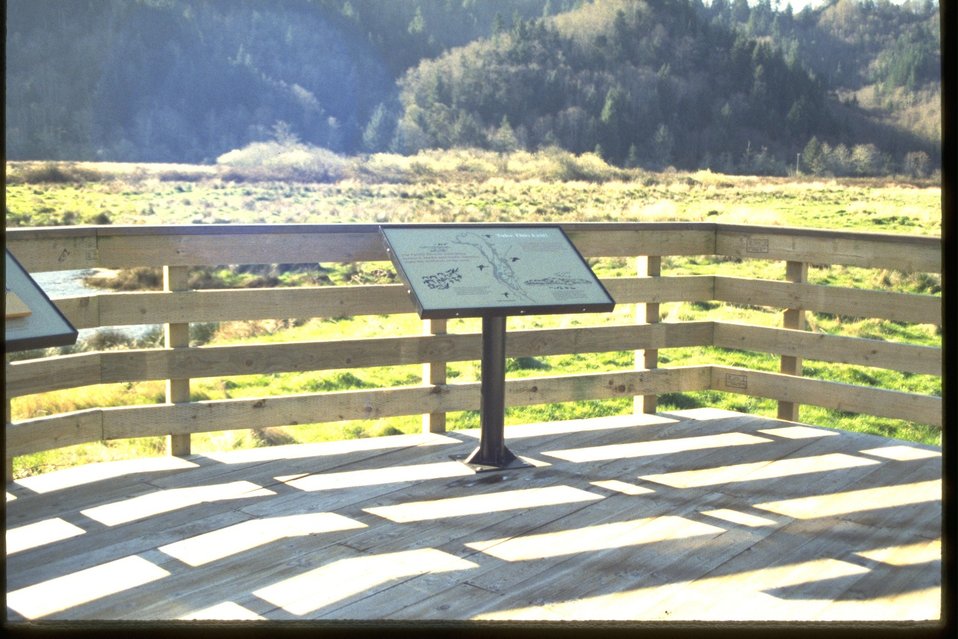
Wetland overlook viewing platform with interpretive panels.